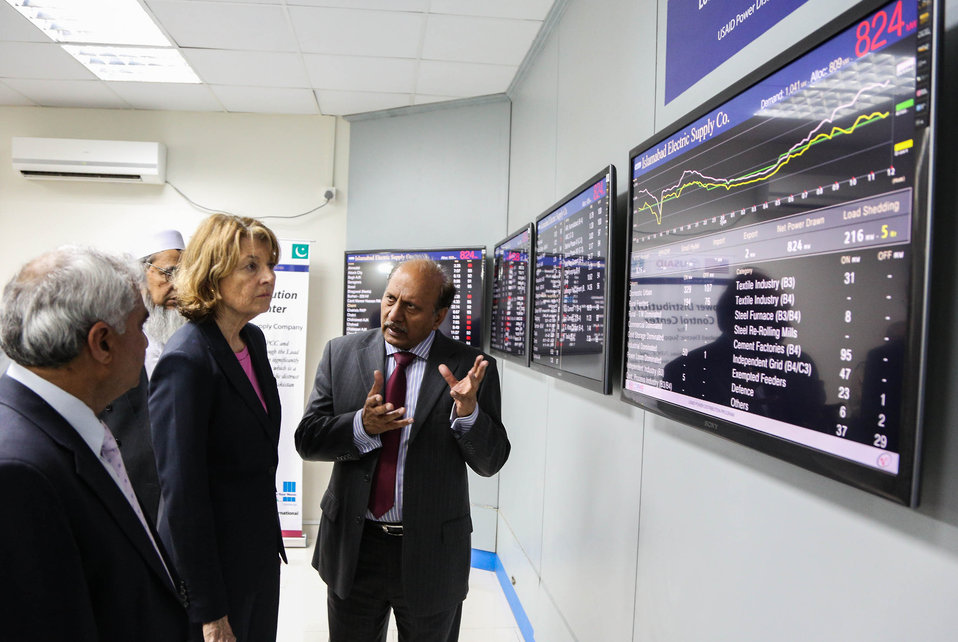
U.S. Improves IESCO’s ability to Reduce Unscheduled Load Shedding

Nancy Estes, Acting Mission Director, United States Agency for International Development (USAID), touring the Power Distribution Control Center (PDCC) at IESCO.